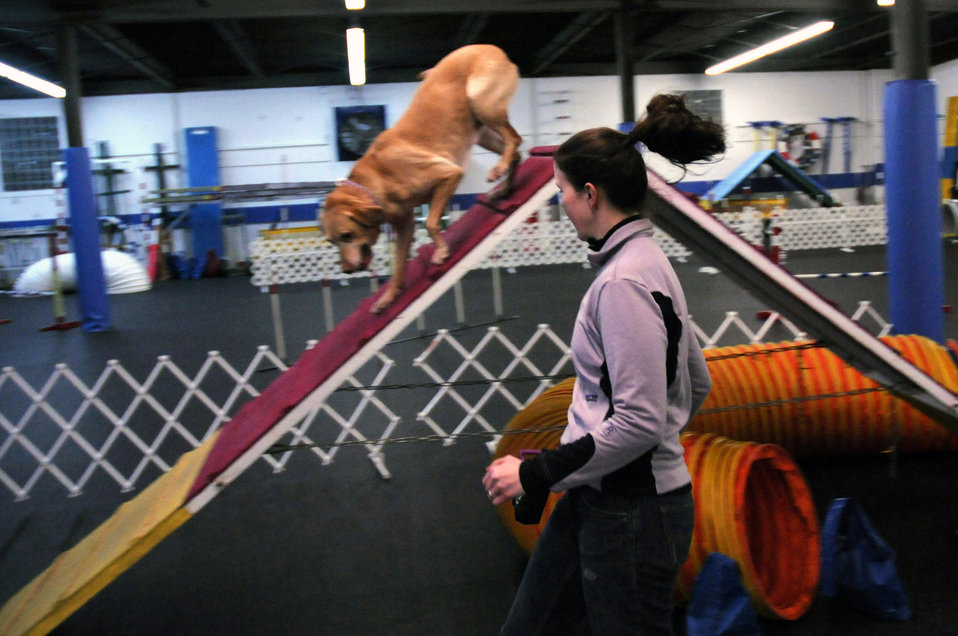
Rags to Riches in the American Heartland

First Lt. Heather Greatting follows Zoey, her 9-year-old Labrador retriever, over an obstacle Feb. 11 during agillity training. The lieutenant obtained Zoey from a Labrador rescue center and currently competes with her in canine agility. Lieutenant Greatting is a space intelligence surveillance and reconnaissance systems employment analyst with the National Air and Space Intelligence Center at Wright-Patterson Air Force Base, Ohio.